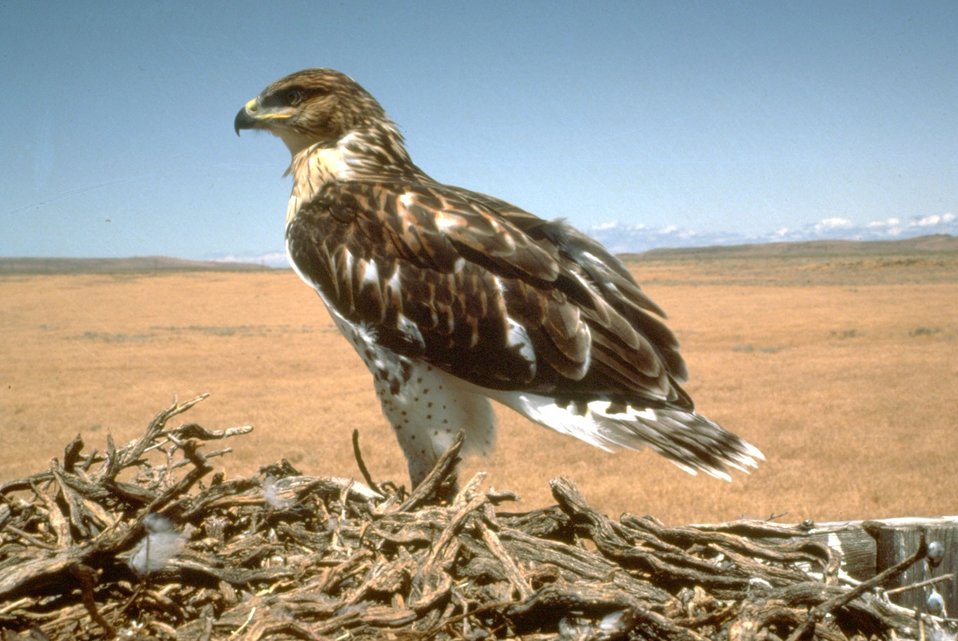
Falcon